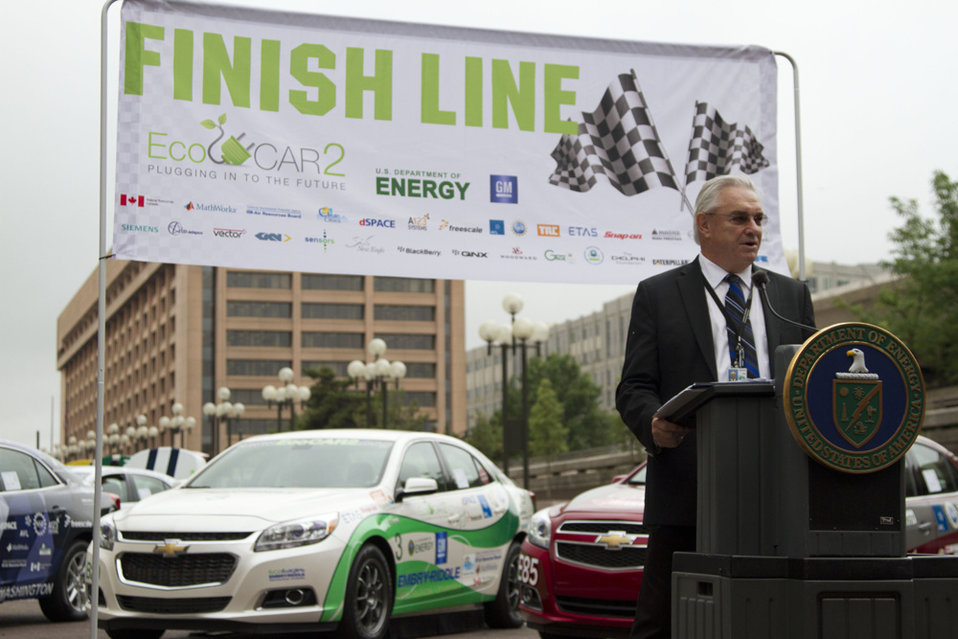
The Energy Department's Dr. Michael Knotek, Deputy Under Secretary for Science and Energy, speaks at the EcoCAR 2 Finish Line event in Washington, D.C.